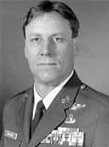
Tim Wilkinson

1990's -- Technical Sgt. Tim Wilkinson received the Air Force Cross for his heroic actions in Mogadishu, Somalia, in 1993. His mission was supporting Task Force Ranger during an 15-hour firefight, the longest sustained firefight by U.S. forces since the Vietnam War.